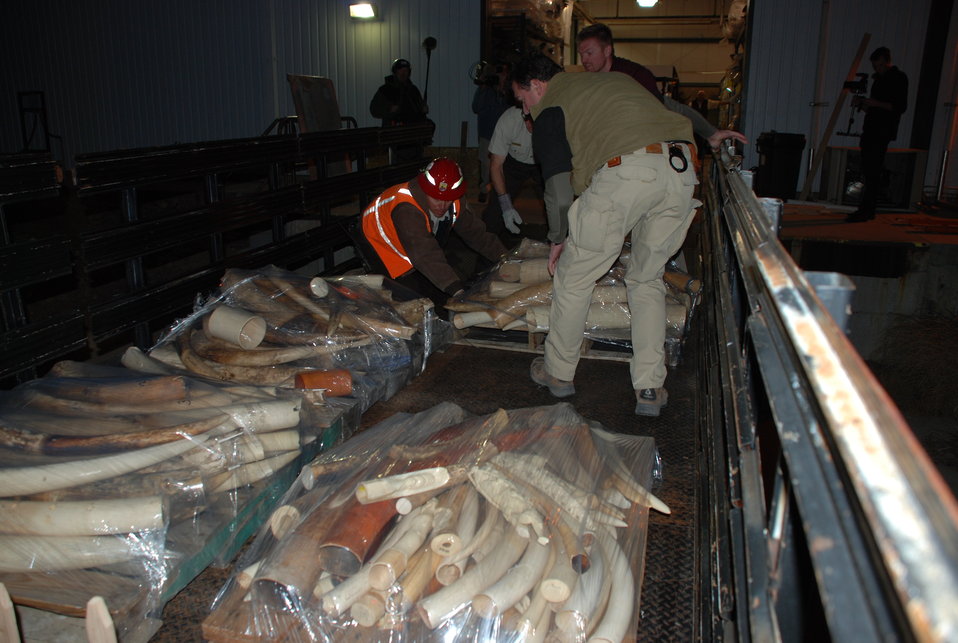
Before sunrise crews began loading ivory which FWS seized during undercover investigations of organized smuggling operations or confiscating at the U.S. border over the past 25 years.